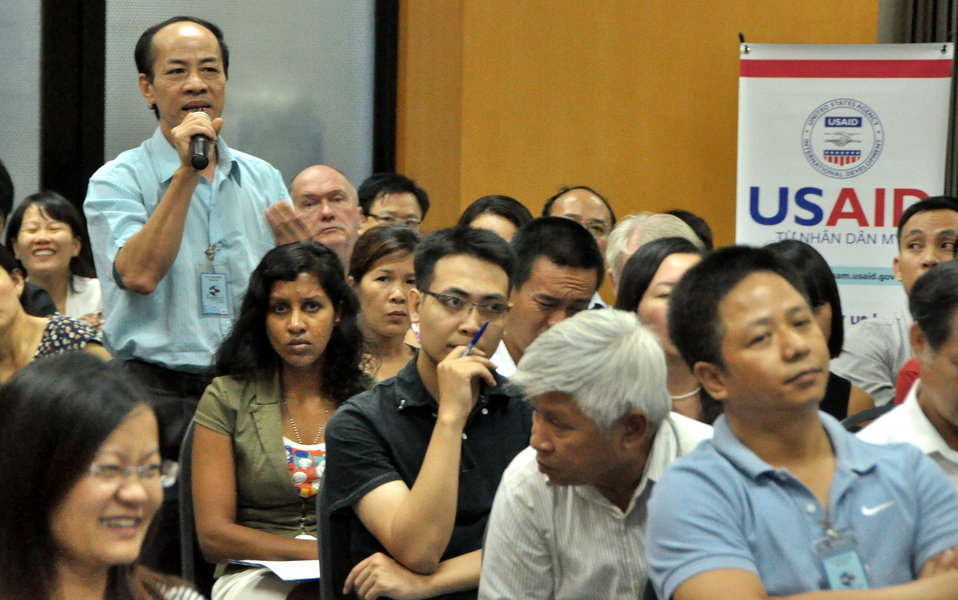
Development Grants Program Workshop in Hanoi

July 24, 2013